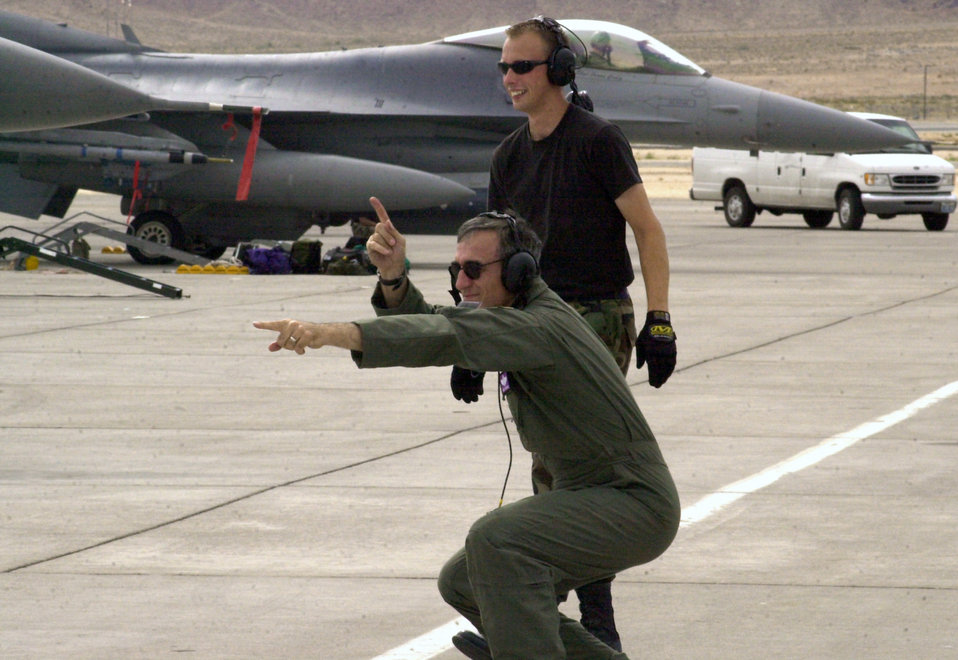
That way

NELLIS AIR FORCE BASE, Nev. -- Brig. Gen. Michael Worden marshals an F-16 Fighting Falcon here while crew chief Staff Sgt. Aaron M. Hudson supervises. Worden commands the 31st Fighter Wing at Aviano Air Base, Italy, and Hudson is assigned to the 31st Aircraft Maintenance Squadron. The airmen are participating in a Red Flag exercise which ends Aug. 29.